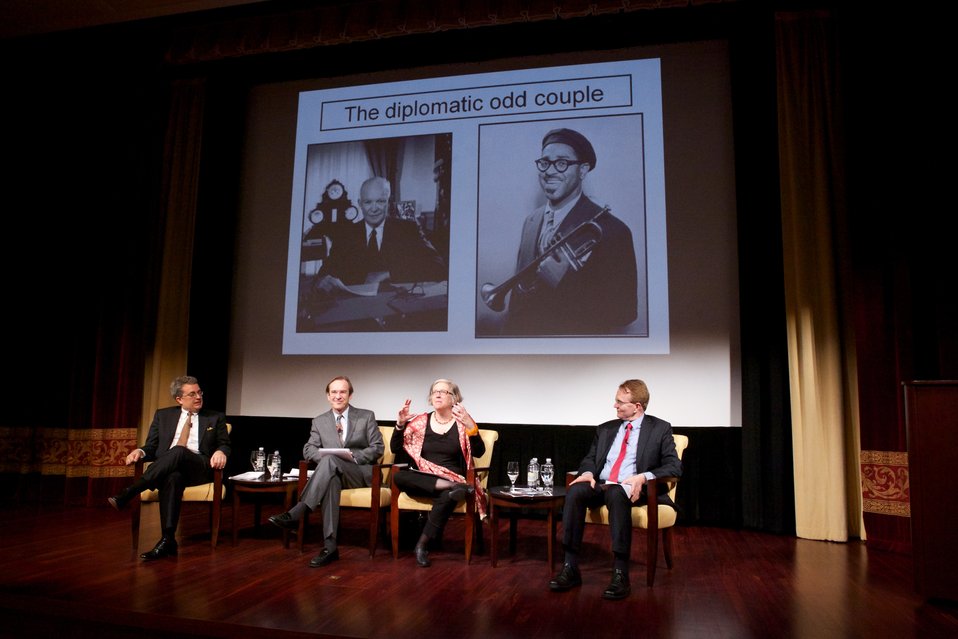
Jazz Diplomacy: Sending America's Music to the World